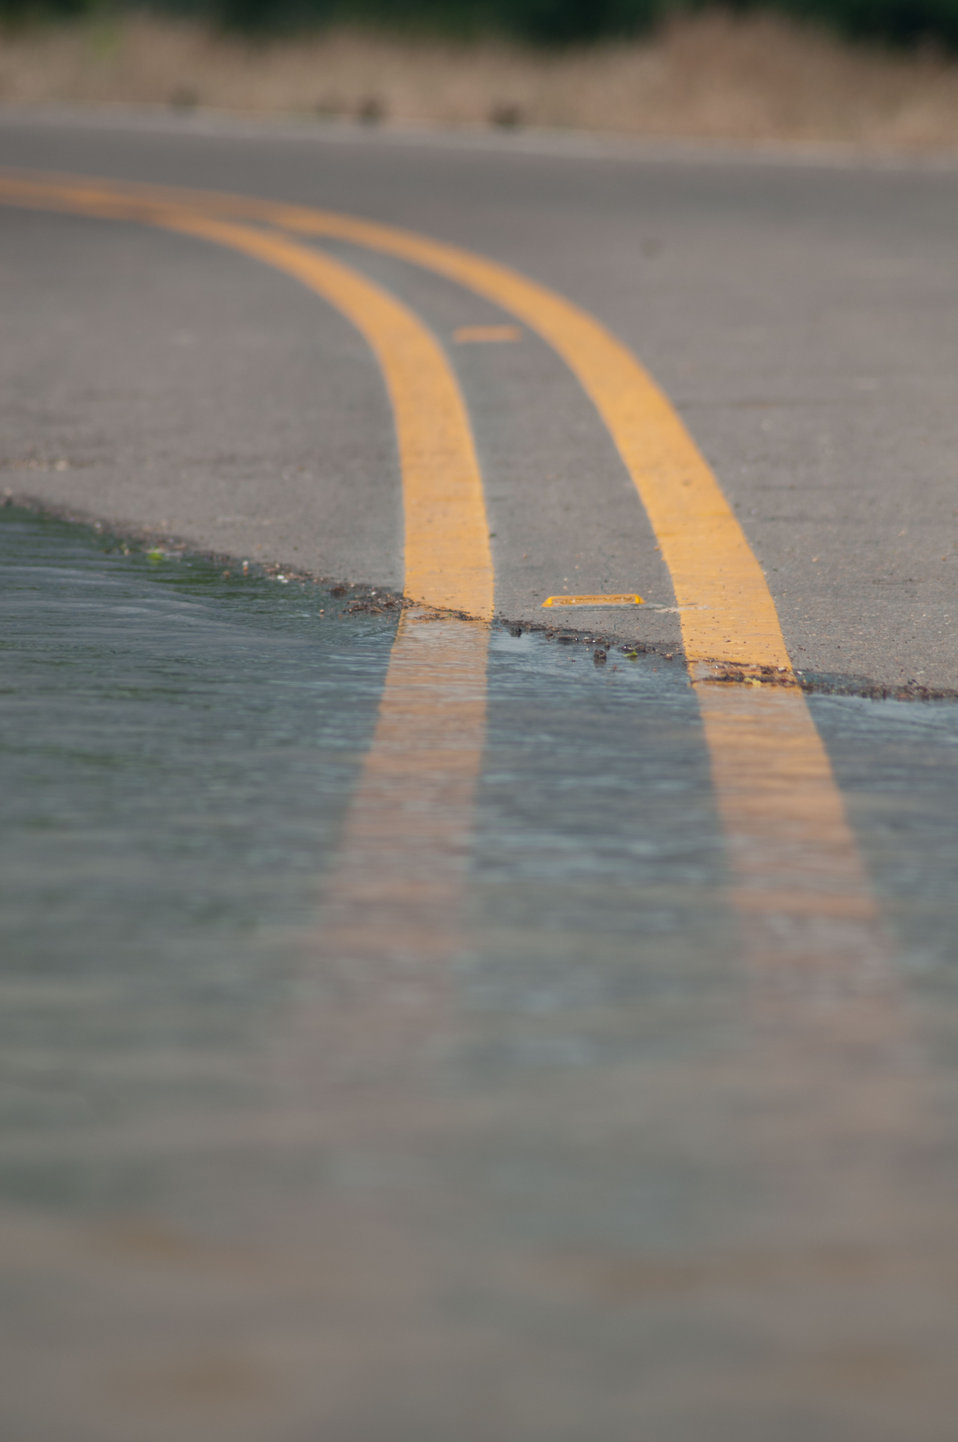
Slowly the water crests the roadways and official have begun to close roads as needed.